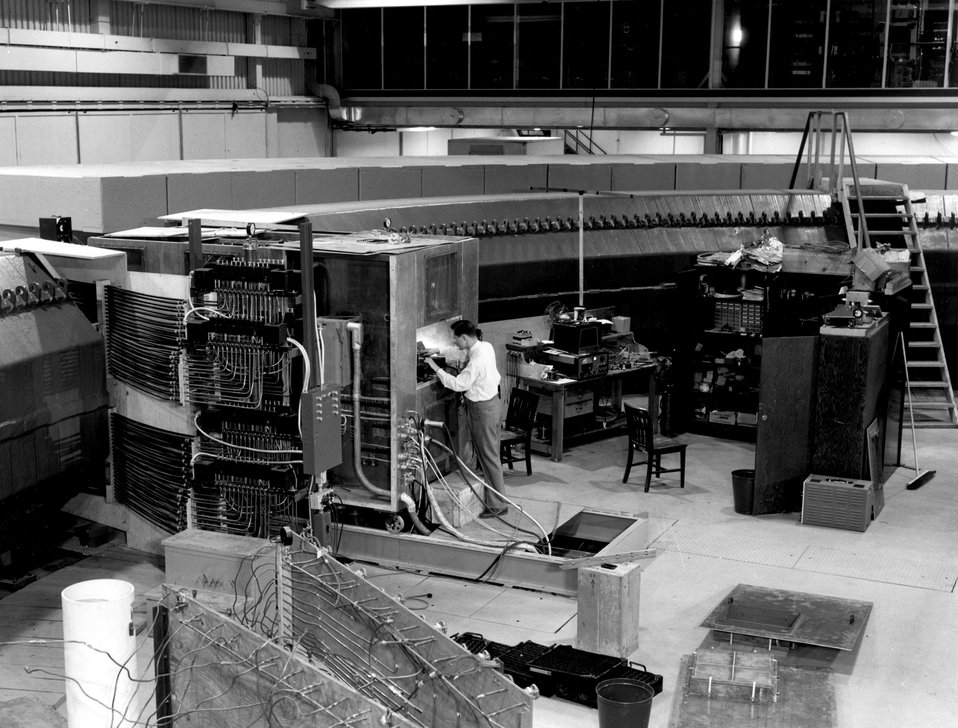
A view of the inside of the Cosmotron ring showing engineer working or high level power amplifier. The orderly assembly of tubes and hoses to the left is
a portion of the water flow interlock system.